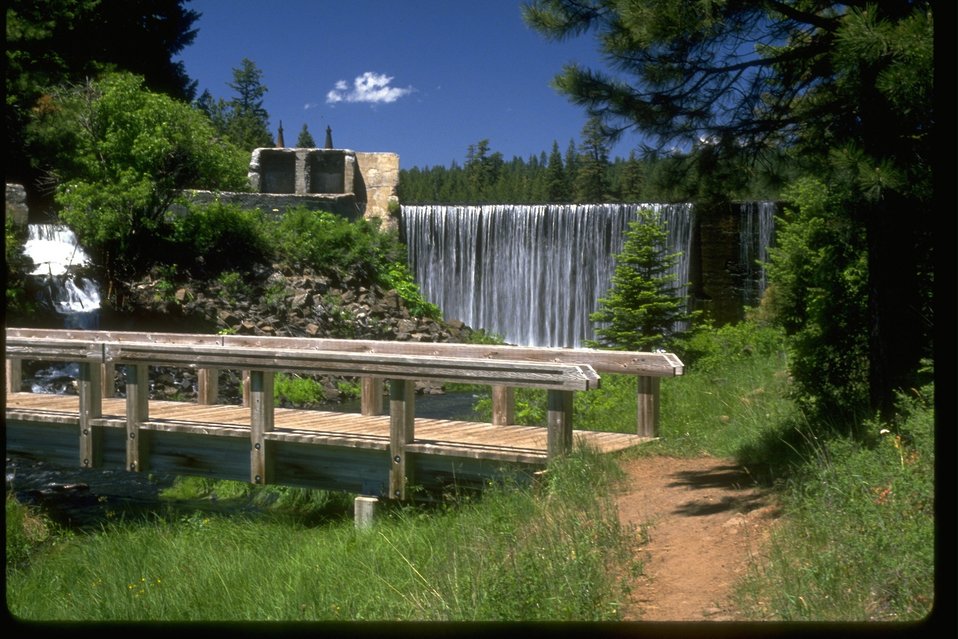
A bridge below the Little Hyatt Dam.